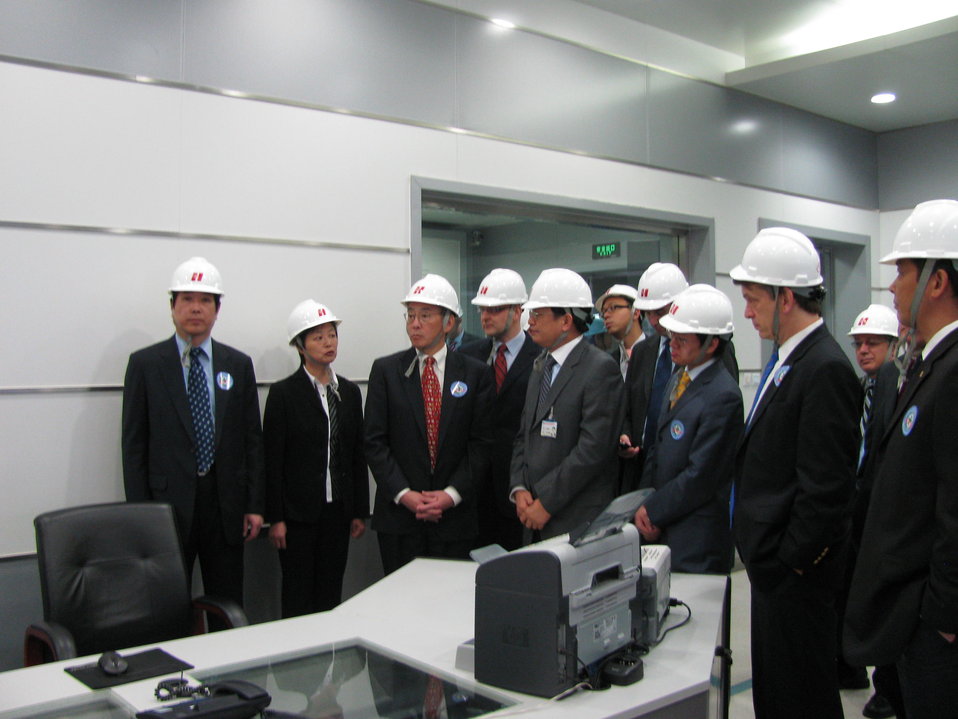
Shanghai 006